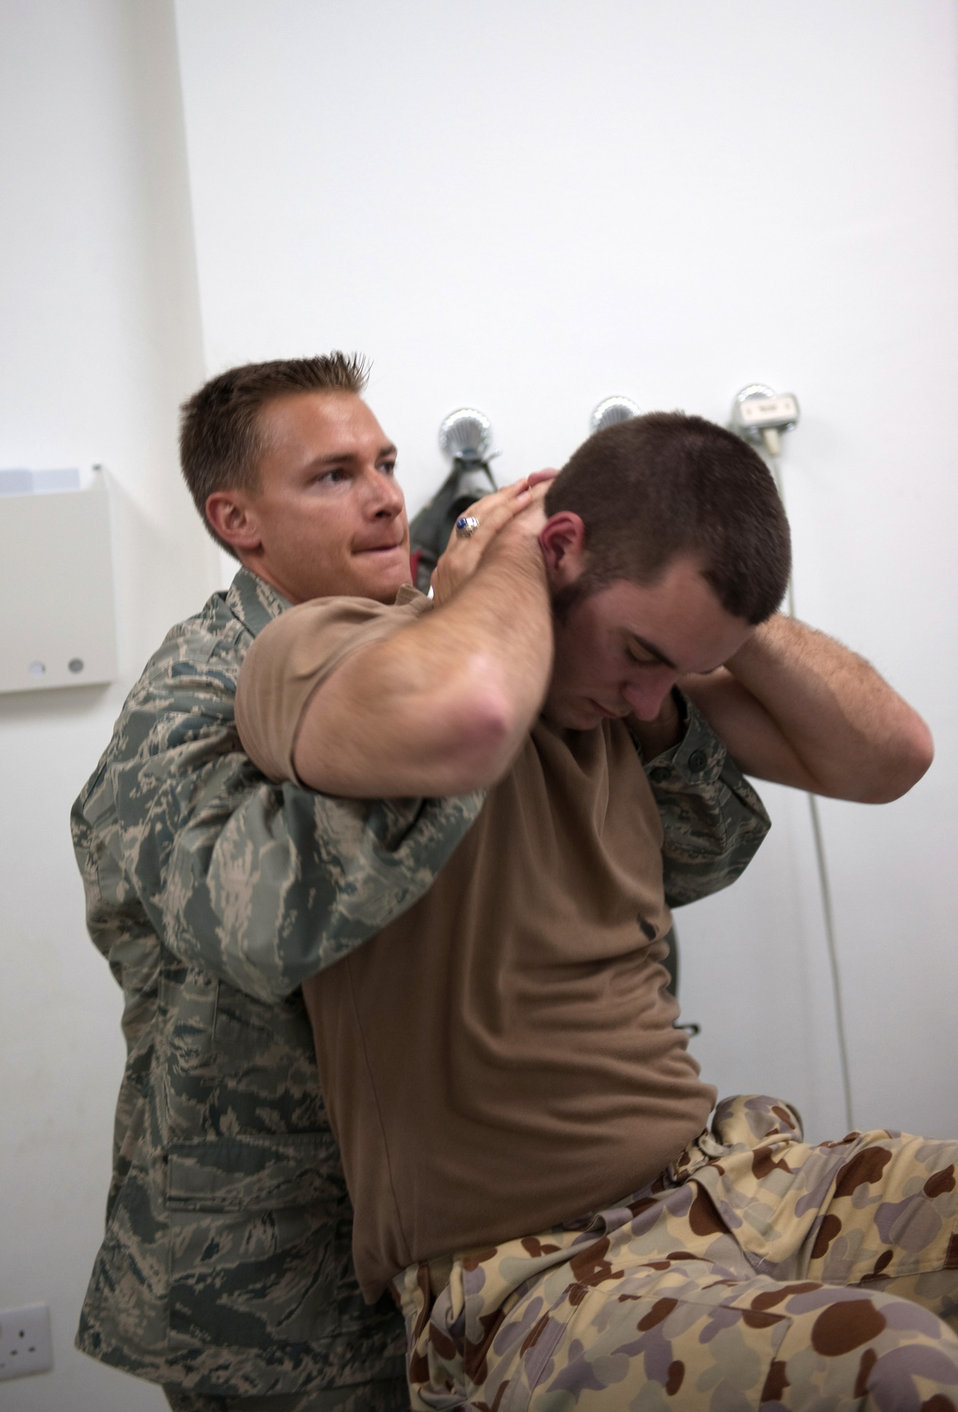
Physical therapists keep servicemembers in the fight

Maj. (Dr.) Christian Lyons performs cervicothoracia traction manipulation on Royal Australian Air Force Cpl. Adam Henry July 28 at an air base in Southwest Asia. Physical therapists help all servicemembers and coalition partners deployed to the U.S. Central Command area of responsibility who are in need of rehabilitative care. Doctor Lyons, a 379th Expeditionary Medical Group operations flight physical therapist, is deployed from Royal Air Force Lakenheath, England.